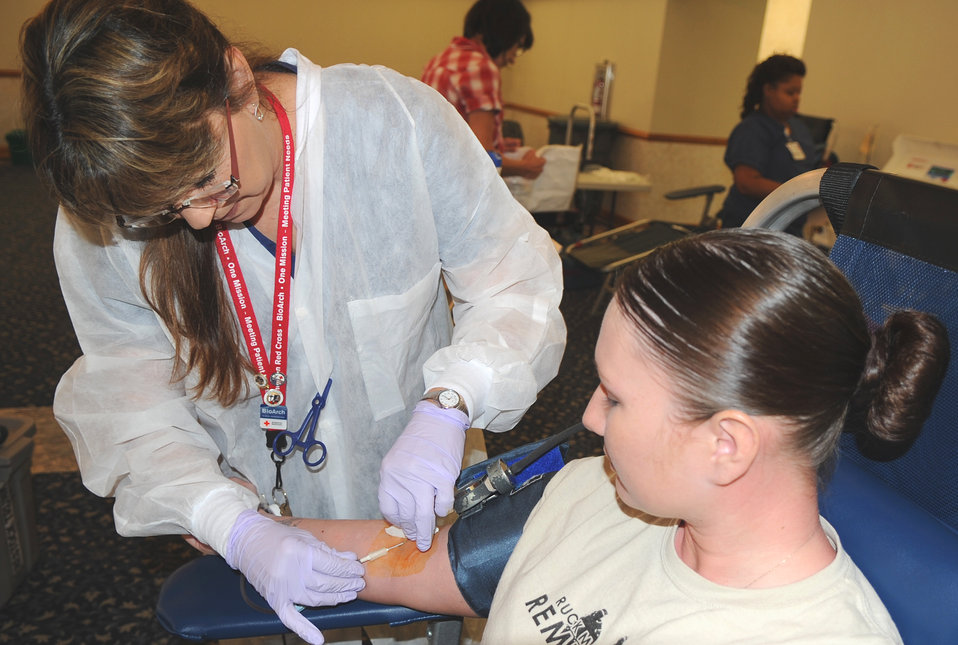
Draining the veins, for a good cause

SEYMOUR JOHNSON AIR FORCE BASE, N.C. – Donna Ward, American Red Cross medical technician, draws blood from Staff Sgt. Jennifer Nedzweckas, 4th Security Forces Squadron vehicle control officer, at Seymour Johnson Air Force Base, Nov. 10, 2011. The Red Cross is the largest supplier of blood and blood products in the United States. Nedzweckas hails from St. Roberts, Mo.